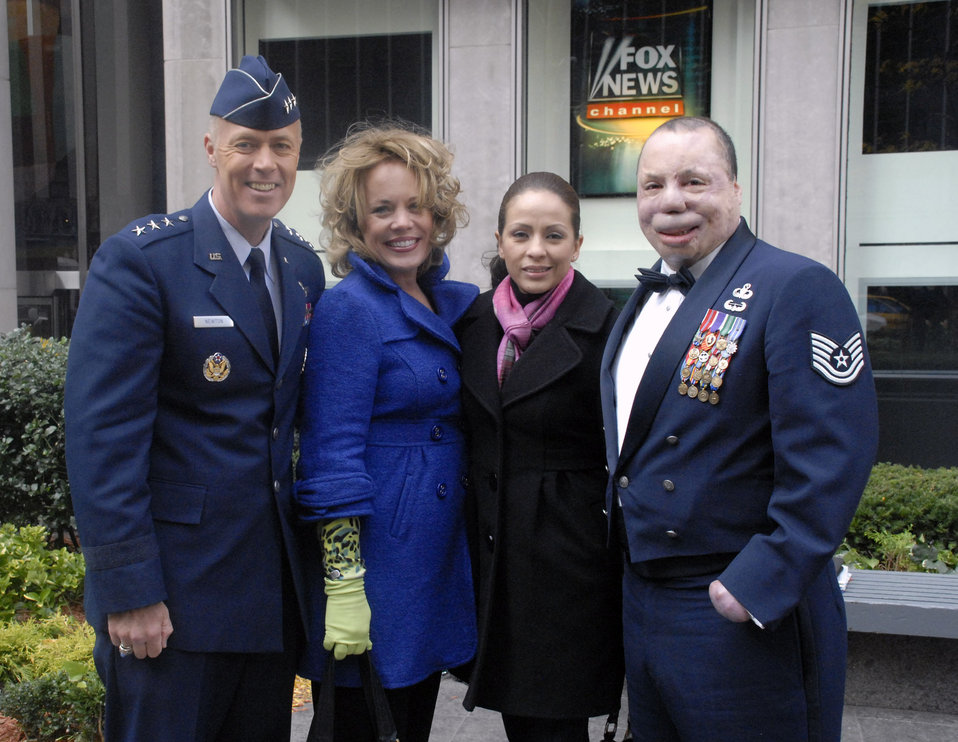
General, NCO talk about warrior care on national TV

Lt. Gen. Richard Y. Newton III, Jody Newton, Carmen Del Toro and Tech. Sgt. Israel Del Toro stand outside Fox News following an interview with the men on